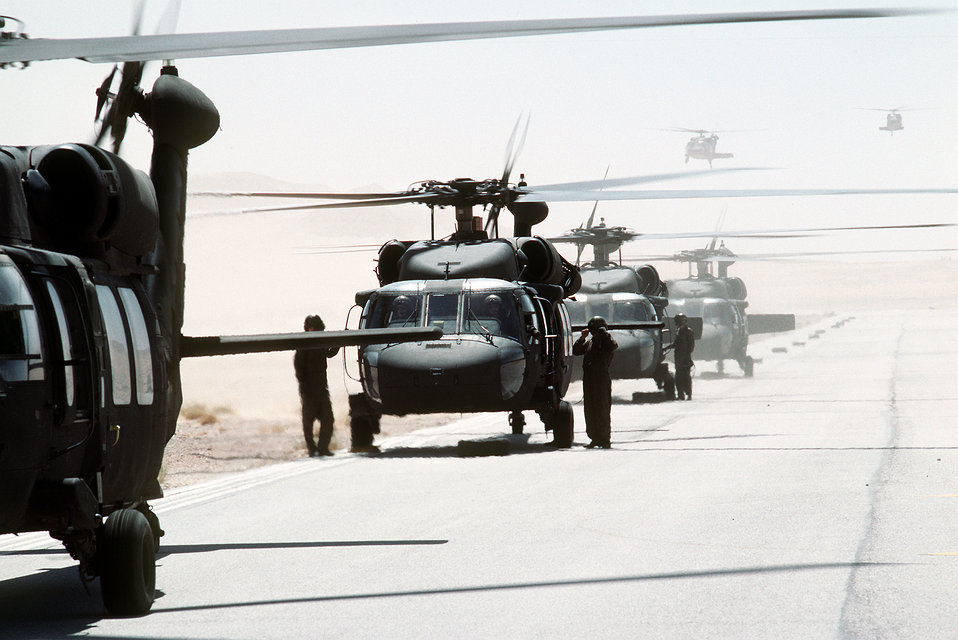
UH-60A Black Hawk helicopters prepare to takeoff as the 82nd Aviation Brigade relocates in the desert during Operation Desert Shield.